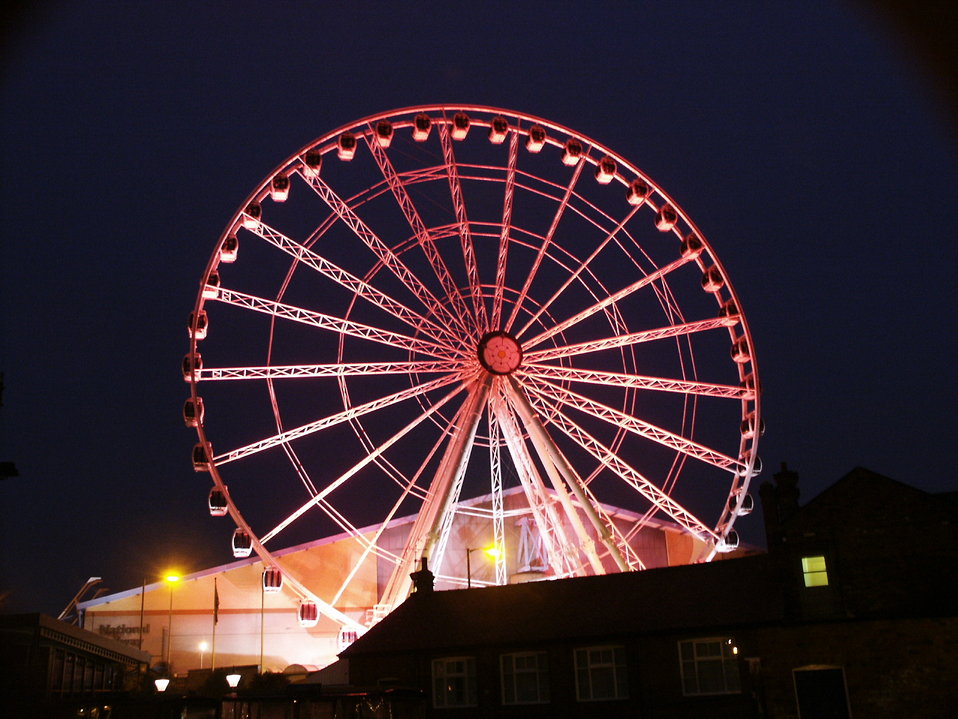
A night-time view of the south side of the 54 metre high Yorkshire Wheel, that was installed at the National Railway Museum in York. It was sited 53°57′35.81″N 1°5′44.42″W / 53.9599472°N 1.0956722°W / 53.9599472; -1.0956722 next to and in line with the southern wall of the museum's Great Hall. Construction started in March 2006 and the wheel operated from 12 April 2006 until 2 November 2008, being dismantled shortly afterwards. It's lit up pink to mark Valentine's week in February 2008.